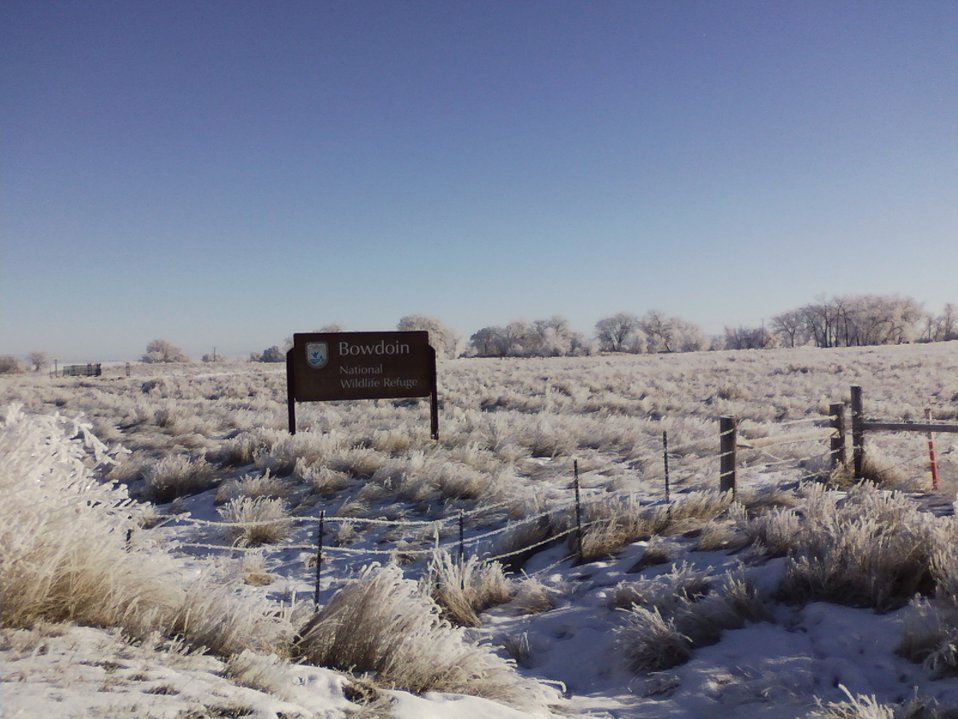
Bowdoin NWR Entrance

The Entrance to the Bowdoin National Wildlife Refuge in the Winter.